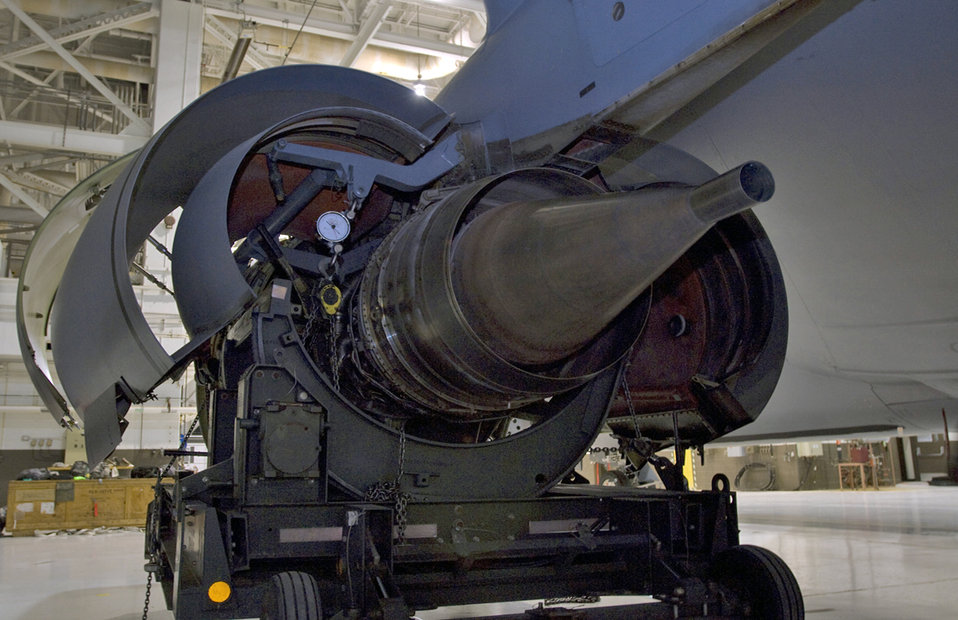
Maintainer remove 26-year-old engine

A KC-135R Stratotanker F108-100 engine awaits transportation March 3, 2010, from McConnell Air Force Base, Kan., to Tinker AFB, Okla., where it will be refurbished.